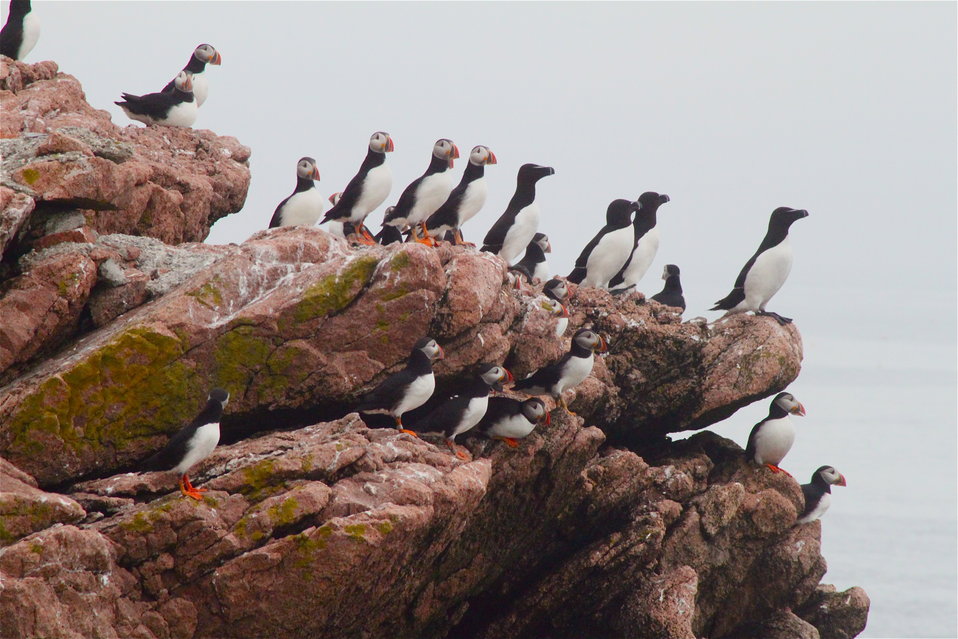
Puffins and Razorbills